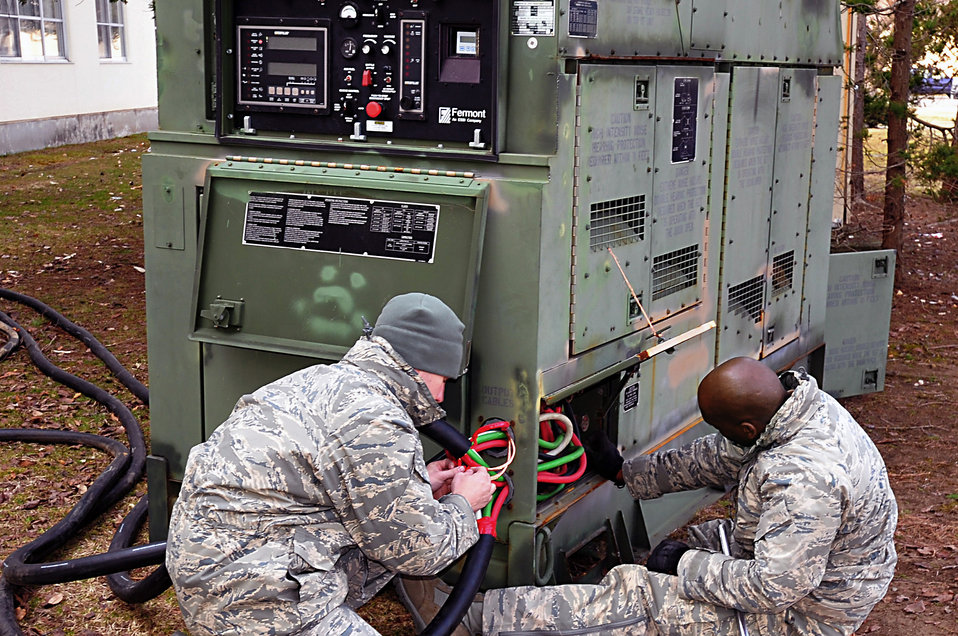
Generators installed at Misawa Inn

U.S. Air Force Airman First Class Aaron Cope, right, and Tech. Sgt. Danny Dottin, connect power cables to a generator at the Misawa Inn Mar. 14, 2011, Misawa Air Base, Japan. Misawa Air Base lost power after feeling the effects of a 9.0 magnitude earthquake. Sergeant Dottin and Airman Cope are assigned to the 18th Civil Engineer Squadron, generator maintenance shop.